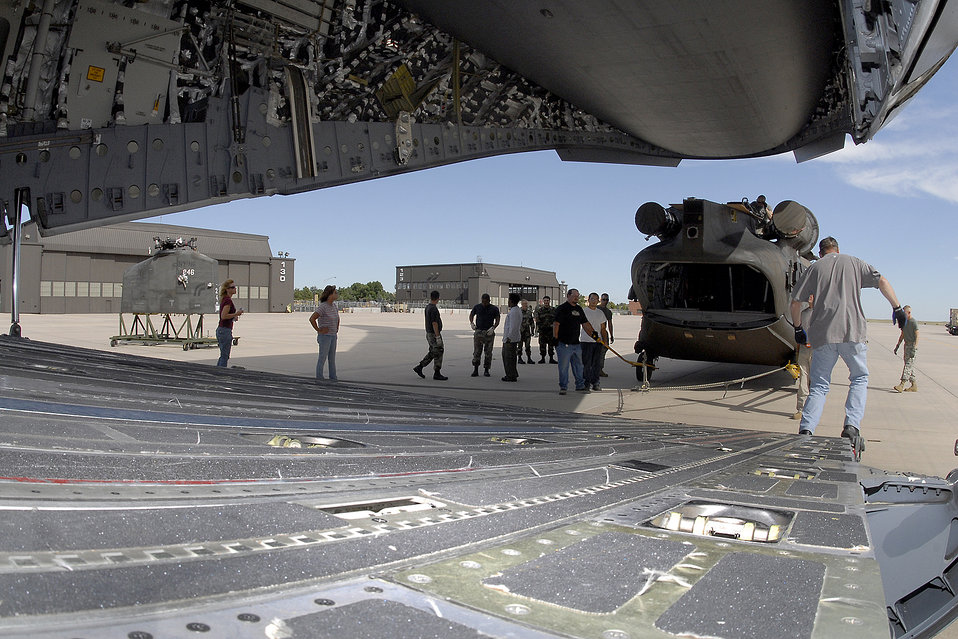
Chinook shipment a joint effort by Army, Air Force

Employees from Sikorsky Support Services Inc., members from the 3rd Battalion of the 126th General Support Aviation Battalion, and National Guard units from New York and Maryland begin to load a Chinook CH-47D into a C-17 Globemaster III for overseas deployment Aug. 30 at Peterson Air Force Base, Colo.